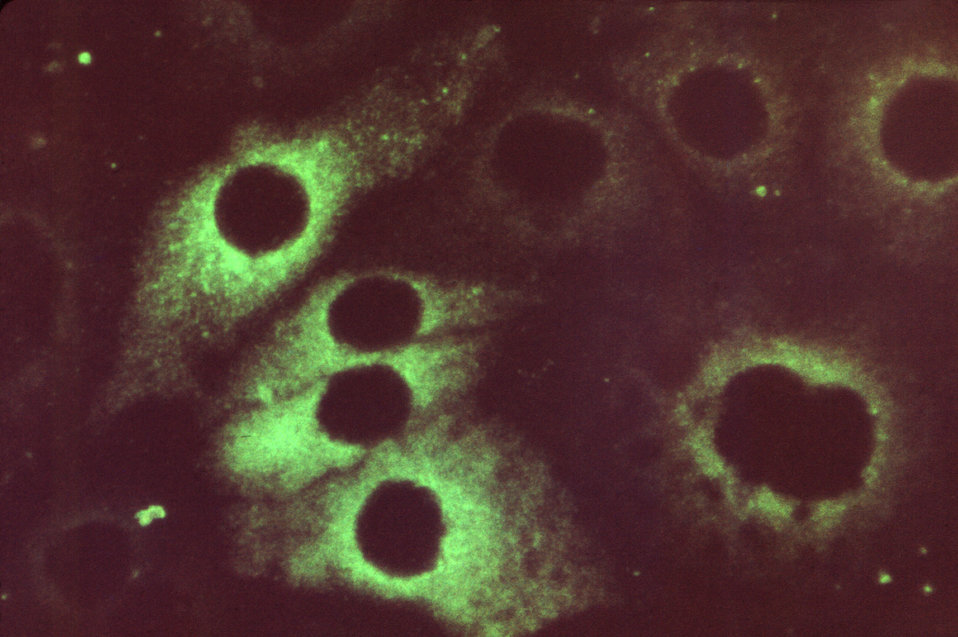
Stained using a fluorescent antibody (FA) technique, this photomicrograph revealed a positive result for this stained serum specimen from a suspected rubella patient.